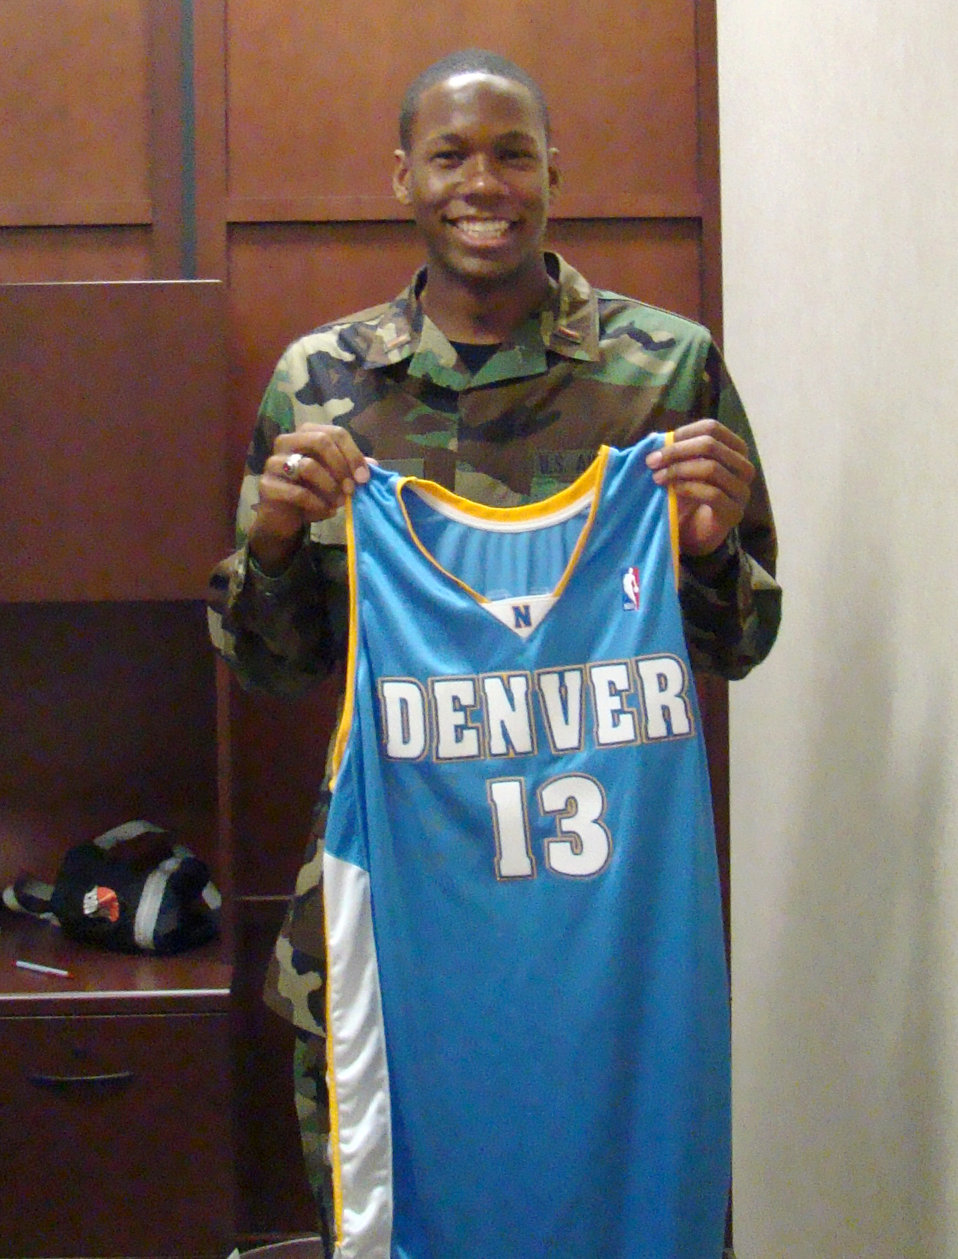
Antoine Hood

Then 2nd Lt. Antoine Hood shows off his Denver Nuggets jersey. Lieutenant Hood was offered a spot on the NBA team and played professionally before he returned to active duty to fulfill his service commitment. The Captain is now eligible to play again and is planning to return to the league.